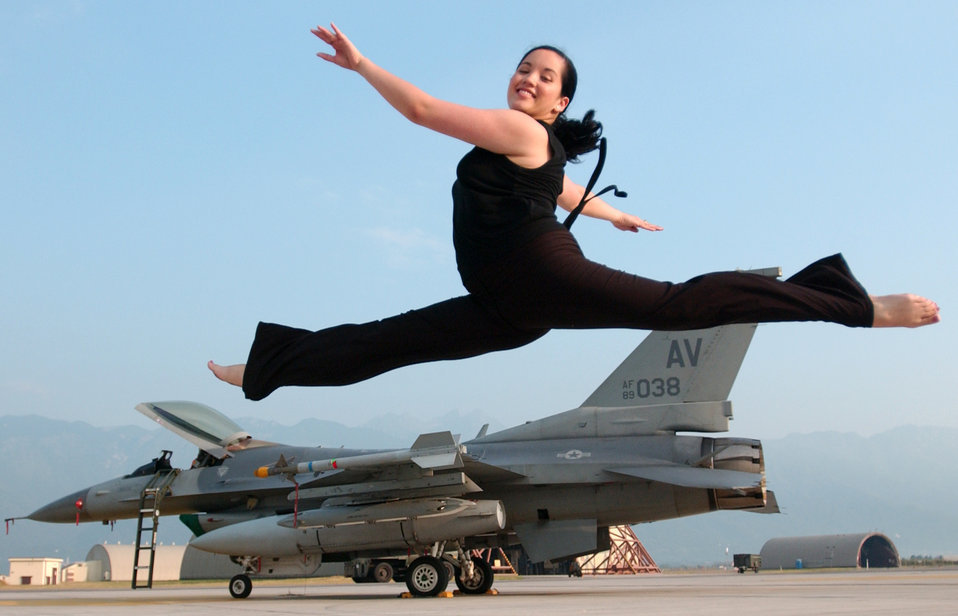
Falcon ballet

AVIANO AIR BASE, Italy -- First Lt. Ariel Batungbacal demonstrates a ballet move in front of an F-16 Fighting Falcon here Aug. 2. Lieutenant Batungbacal is the chief of intelligence with the 31st Fighter Squadron and was the subject of an Airman magazine profile.